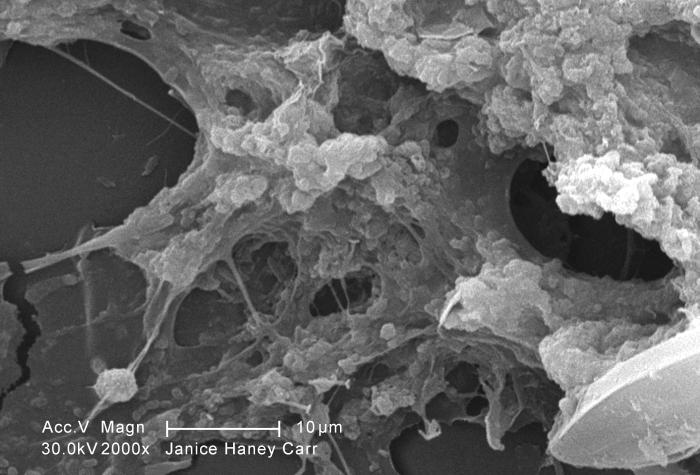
At a magnification of 2000X, this scanning electron micrograph (SEM) of an untreated water specimen extracted from a wild stream, which is mainly used to control flooding during inclement weather, revealed the presence of unidentified organisms, which included bacteria, protozoa, and algae.